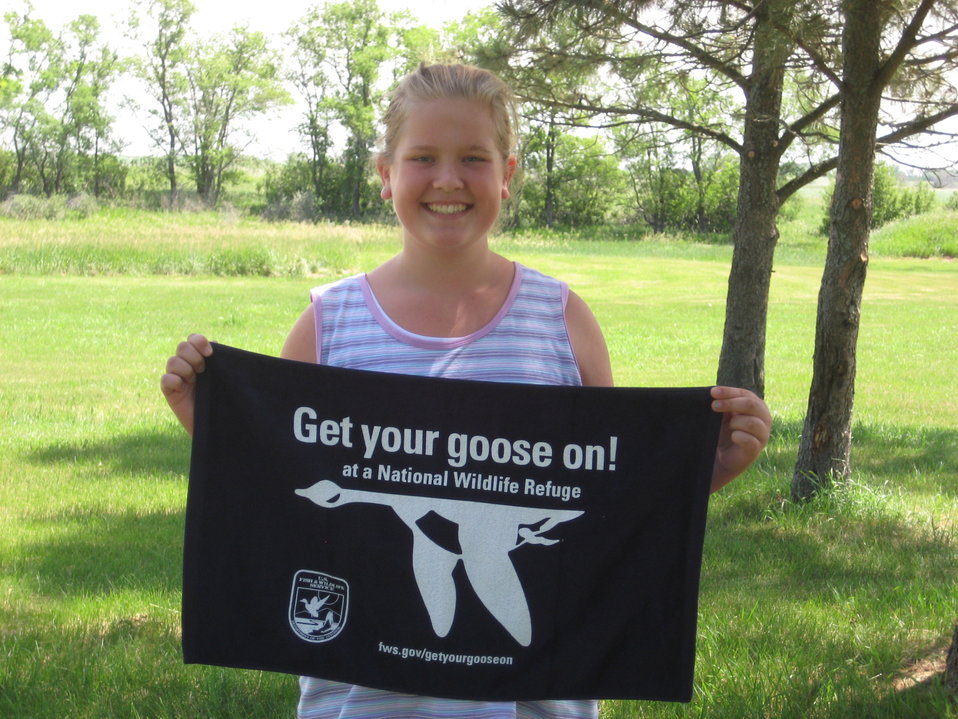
Get Your Goose On!

Taken at Tewaukon National Wildlife Refuge.